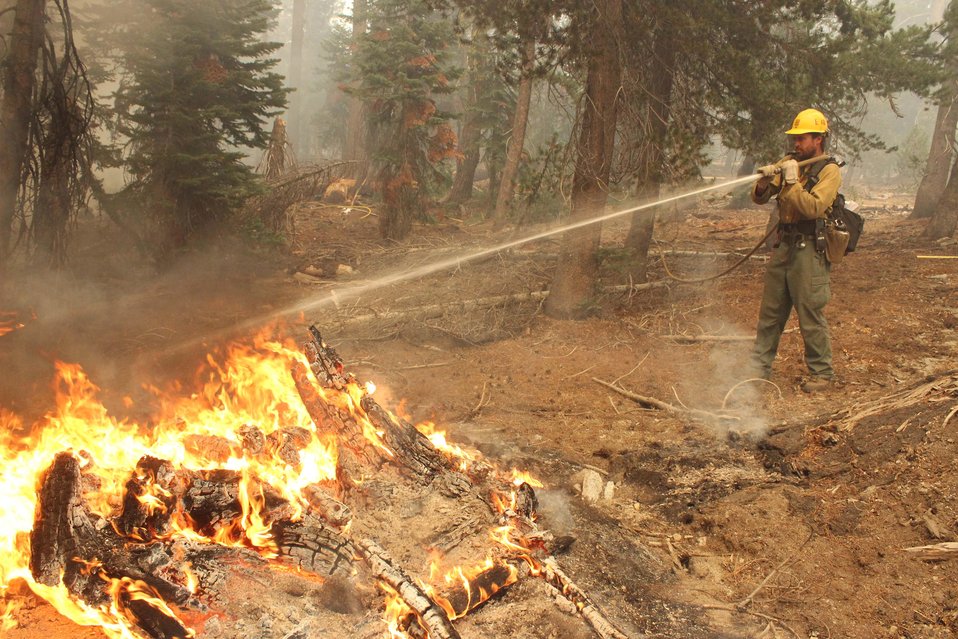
Firefighter sprays hotspot at the Rim Fire. The Rim Fire in the Stanislaus National Forest near in California began on Aug. 17, 2013 and is under investigation. The fire has consumed approximately 256,169 acres and is 84% contained.